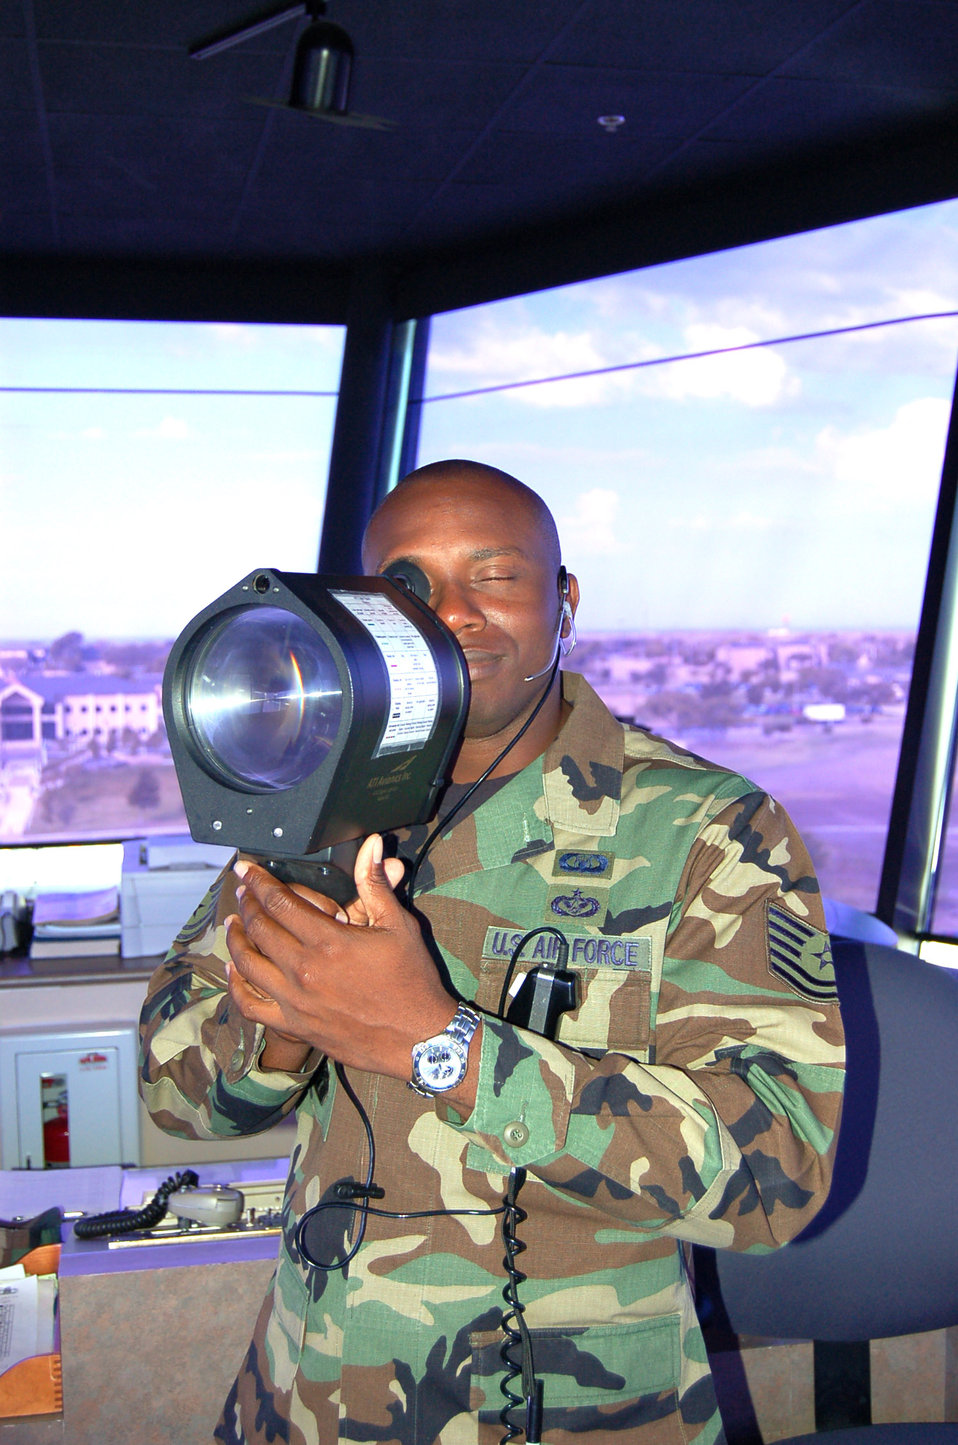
Laughlin students keep air traffic controllers busy

Tech. Sgt. Rond Sampson uses a light gun to signal aircraft crossing the runway at Laughlin Air Force Base, Texas, on June 26, 2006. Sergeant Sampson, from New York City, is an air traffic controller with the 47th Operations Support Squadron.